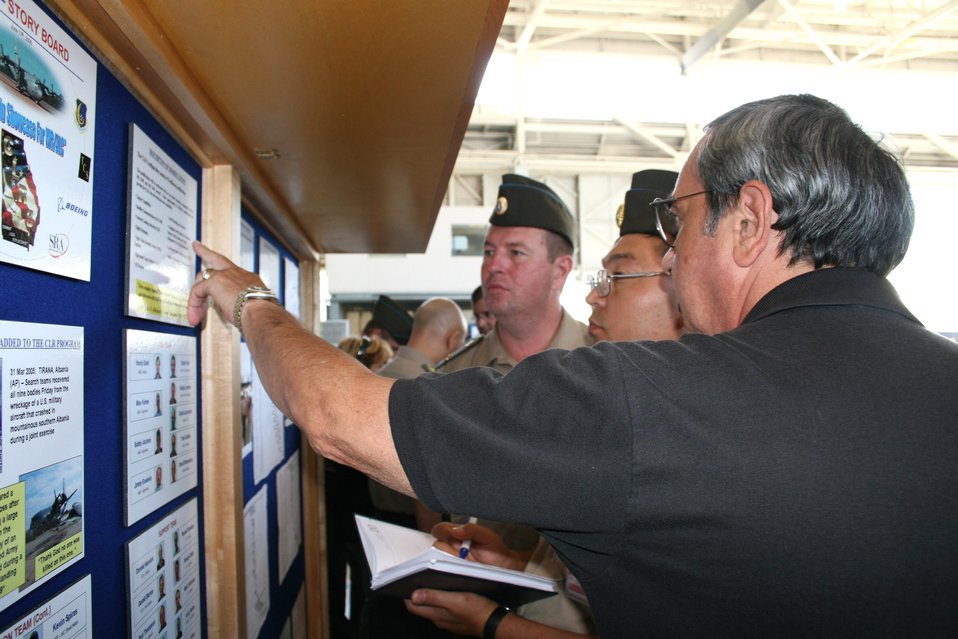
Foreign air force members learn about C-130 programs

Kazakhstan Igor Bekman explains information about the combat loss replacement C-130 Hercules modification program to Republic of Kazakhstan air force Lt. Col. Valeriy Zhllenko and Maj. Yerzhan Bisembayev Sept. 11 at Robins Air Force Base, Ga. Mr. Bekman is a a contract interpreter for the U.S. Department of the State. Colonel Zhllenko is a deputy chief of military unit 53975, and Major Bisembayev is a senior engineer for military unit 53975.